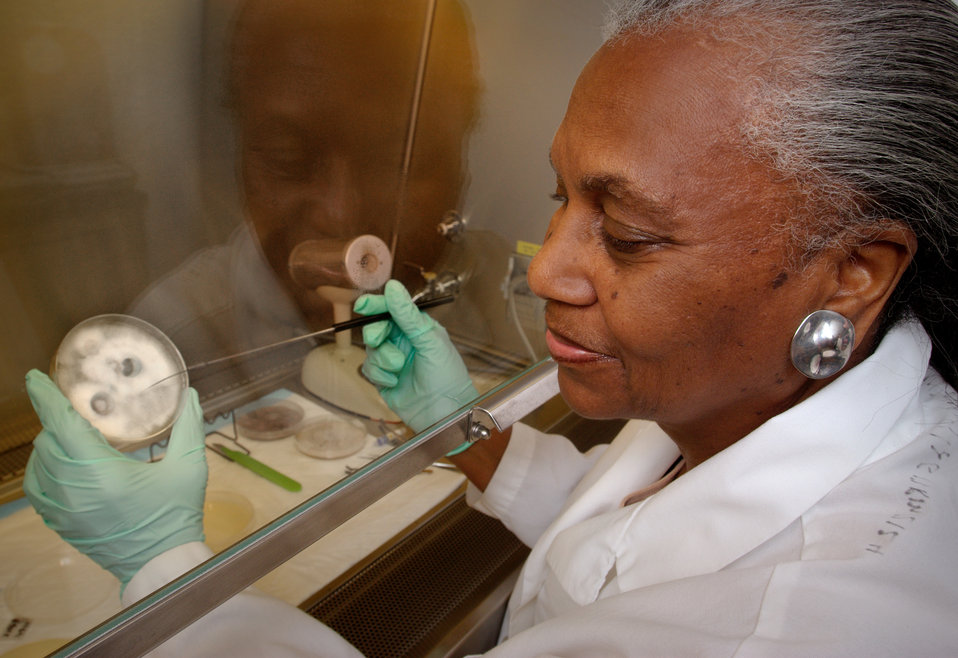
This photograph depicted Center of Disease Control's laboratory technician, Shirley McClinton as she was harvesting organisms from a Petri plate from a group of culture plates, in order to create a Fusarium-isolate culture. These organisms had been received from an outbreak in patients with ocular keratitis. The mould was isolated using Potato Dextrose Agar, which had been incubated at 26�C for 5 - 7 days. This isolate was identified as a mould from the Fusarium oxysporum species complex.Keratitis is an inflammation of the cornea, the front part of the eye, and has many causes including bacteria, viruses and fungi.While Fusarium keratitis can be a serious infection, it is a rare disease. This infection cannot be transmitted from person to person. People who have trauma to the eye, certain eye diseases and problems with their immune system may be at increased risk for these types of infection.